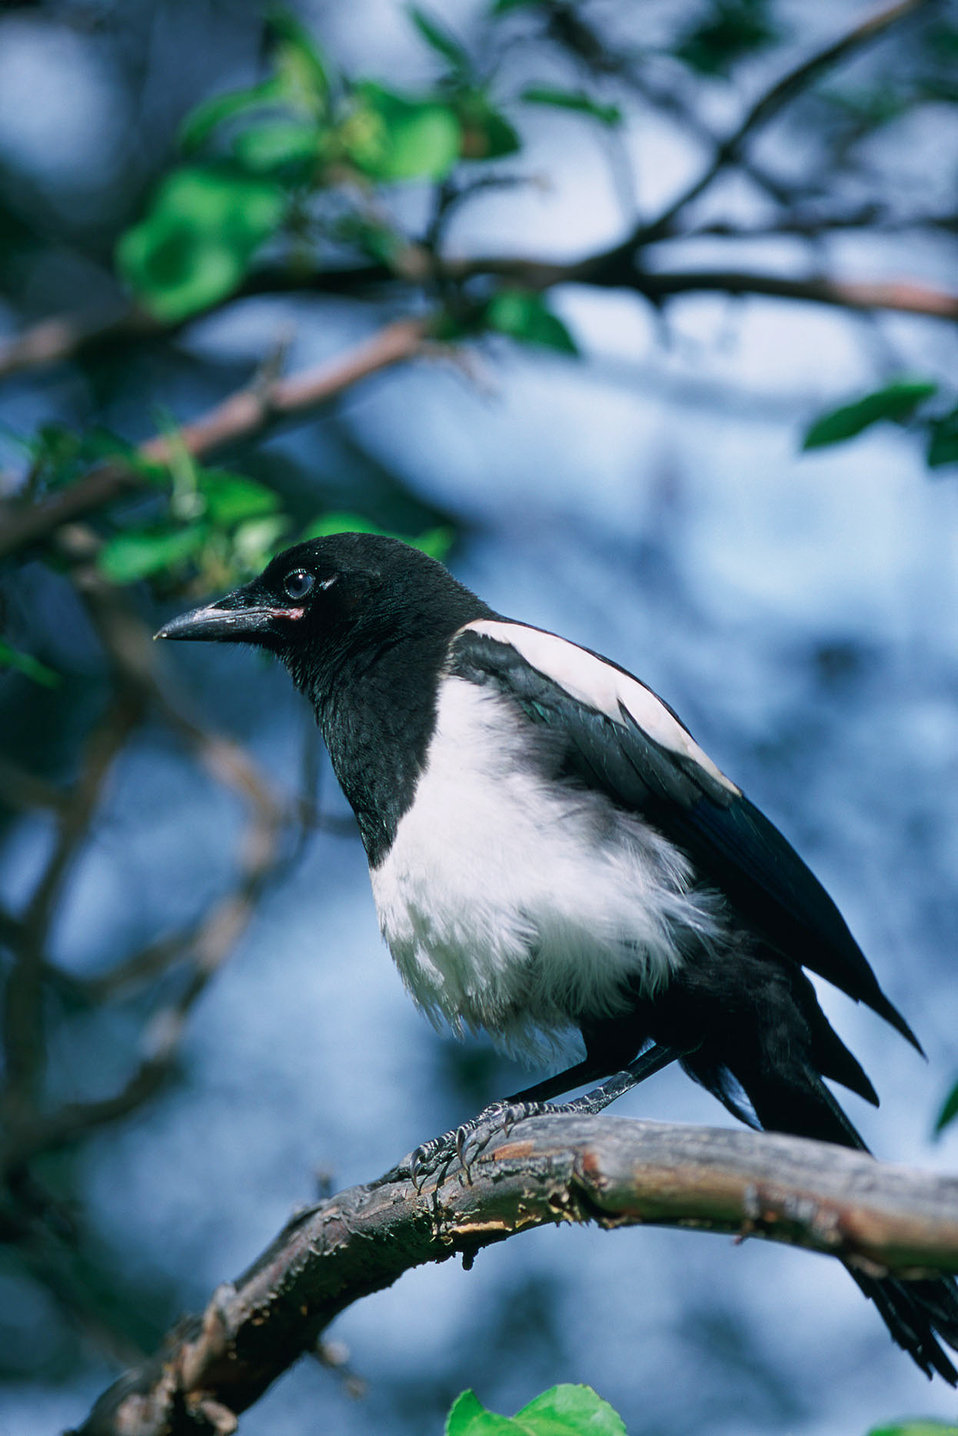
Black-billed magpie

A black-billed magpie is seen perching on a branch.